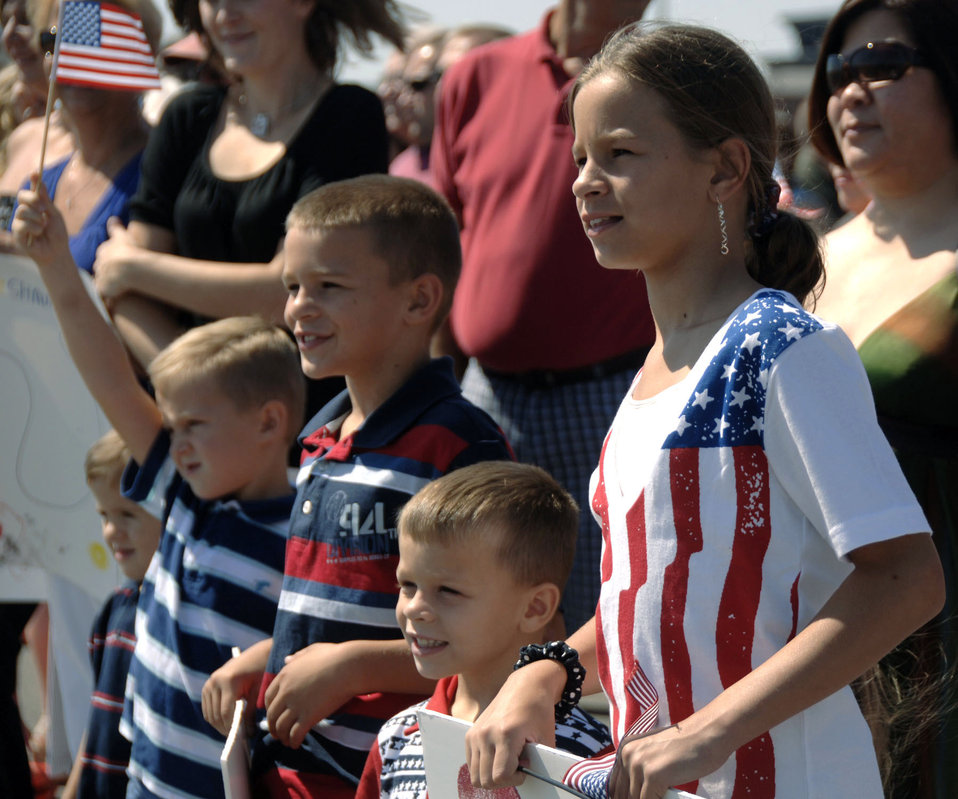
Charleston Airmen welcome home warriors

Children await the arrival of their returning parents Sept. 3 at Charleston Air Force Base, S.C. Members of the 14th Airlift Squadron returned after a four-month deployment to Southwest Asia.